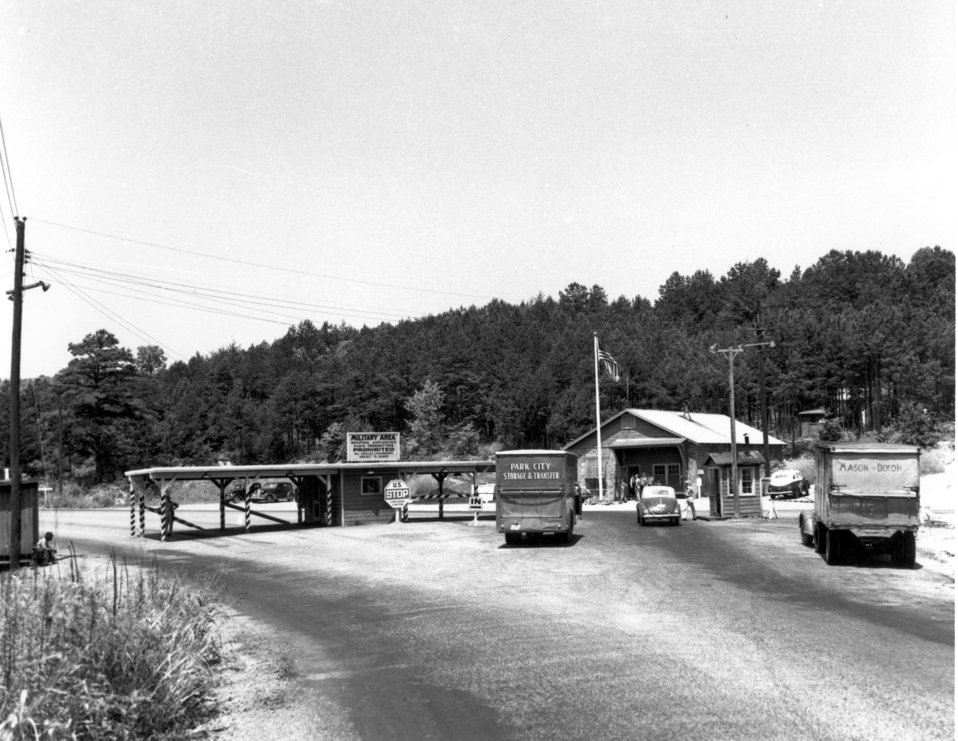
Gate Oak Ridge

1835-4 DOE Photo Ed Westcott Oak Ridge Tennessee 1940s